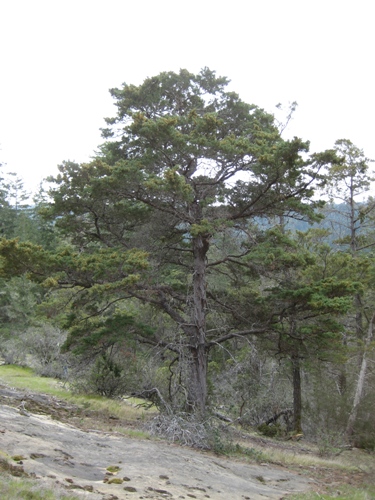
Santa Cruz cypress

Usfws